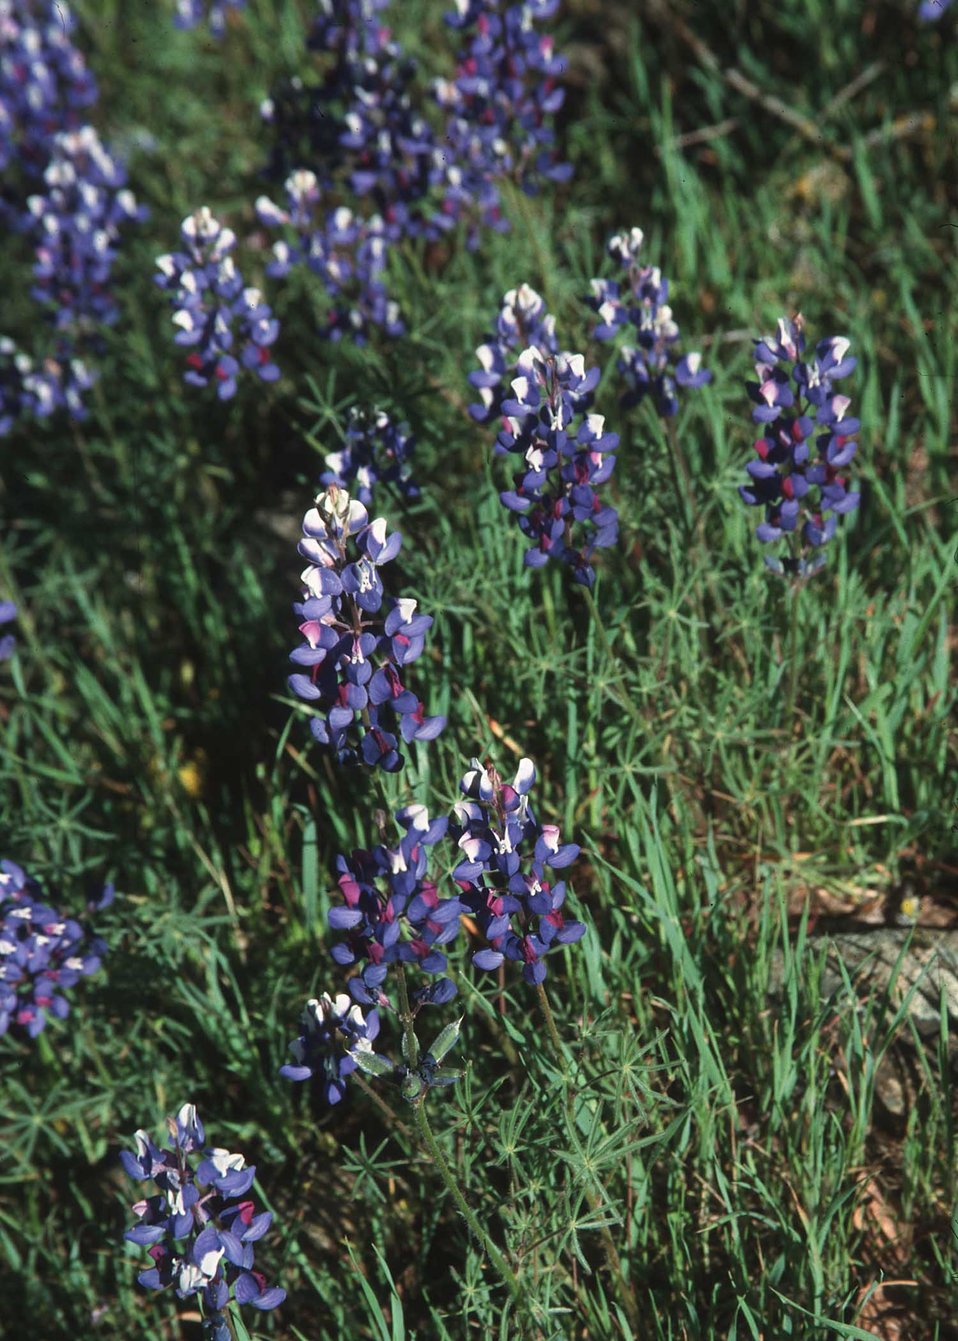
Wildflowers provide habitat and beauty to the landscape.